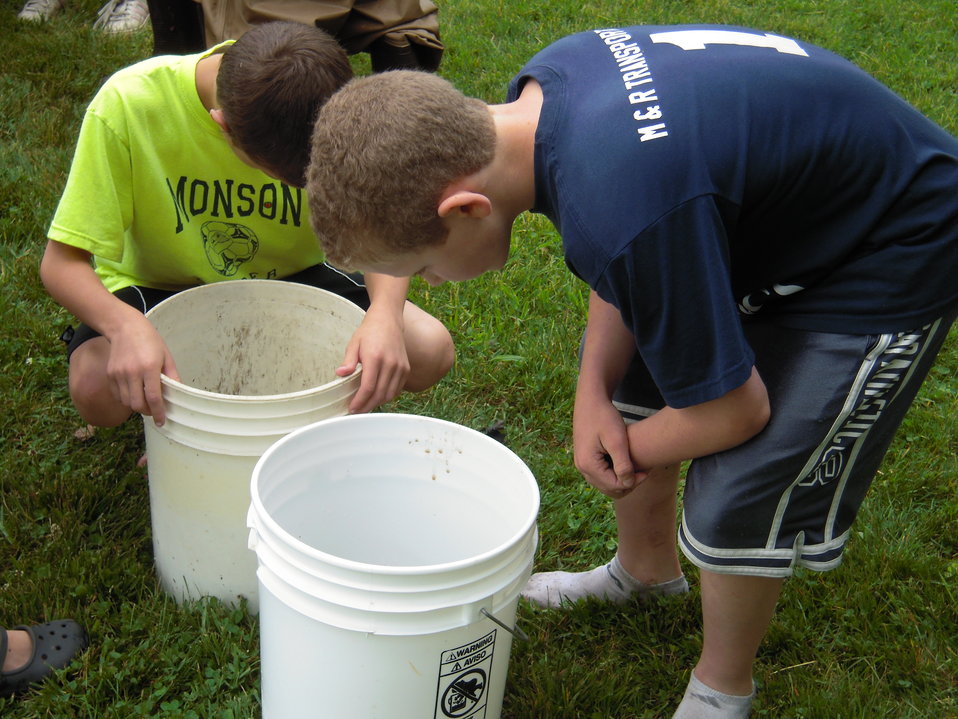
Collection bucket